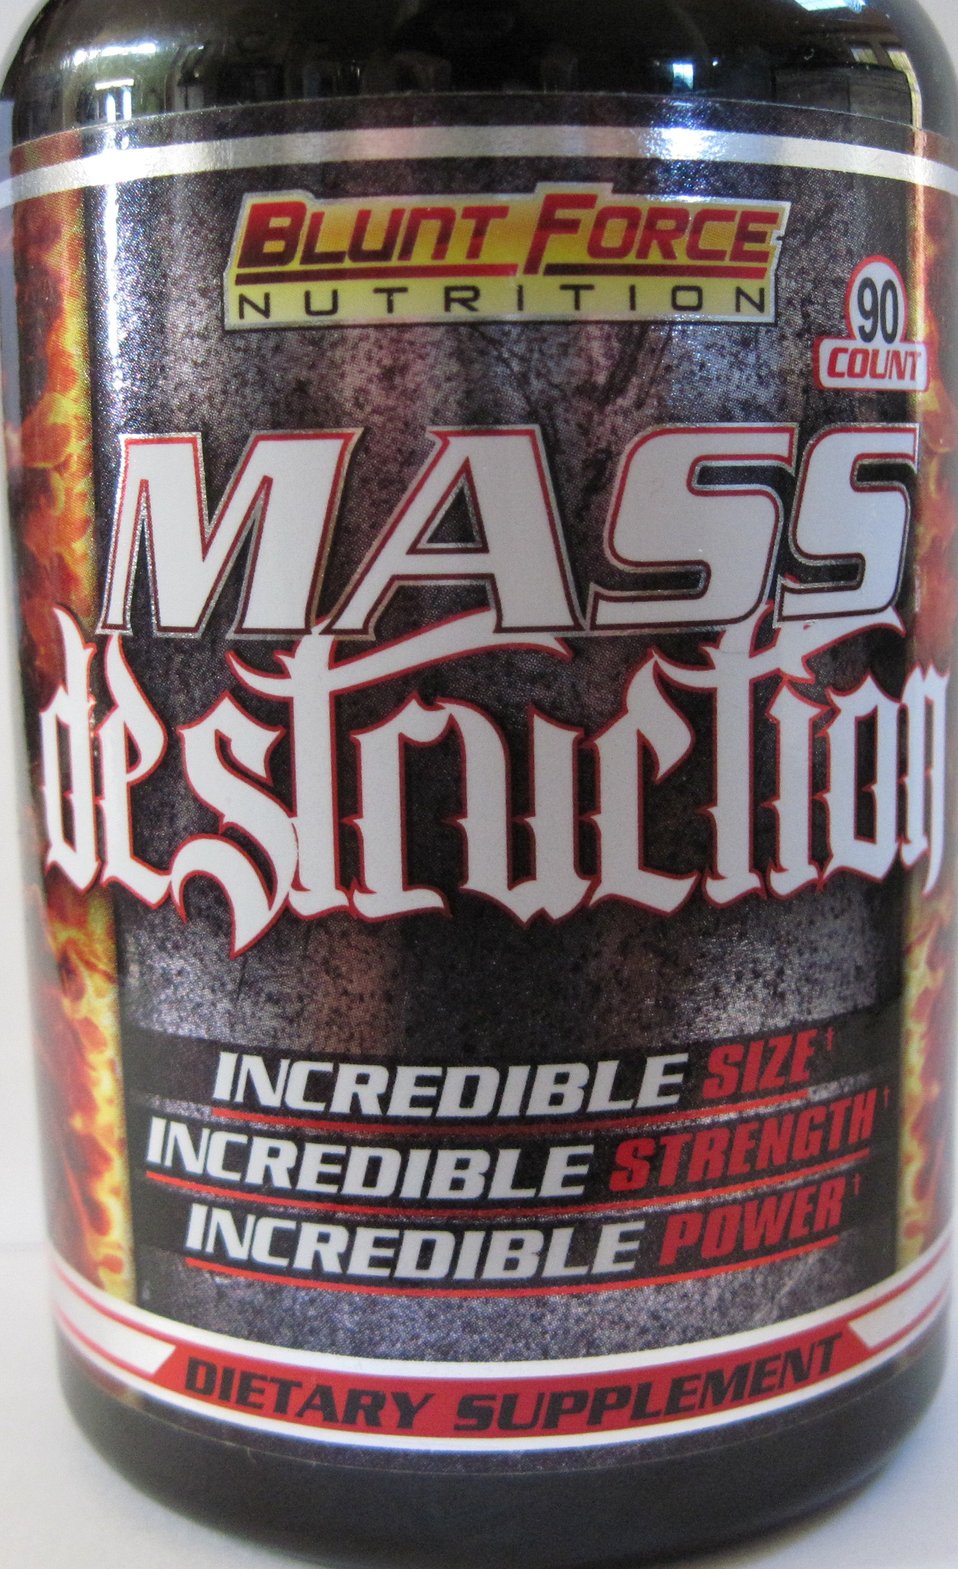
Mass Destruction

The U.S. Food and Drug Administration is advising consumers to immediately stop using a product called Mass Destruction, marketed as a dietary supplement for muscle growth. The product is labeled to contain at least one synthetic anabolic steroid and has been linked to at least one reported serious illness. For more information, read the press release.

And read this Consumer Update: Beware of Fraudulent ‘Dietary Supplements’